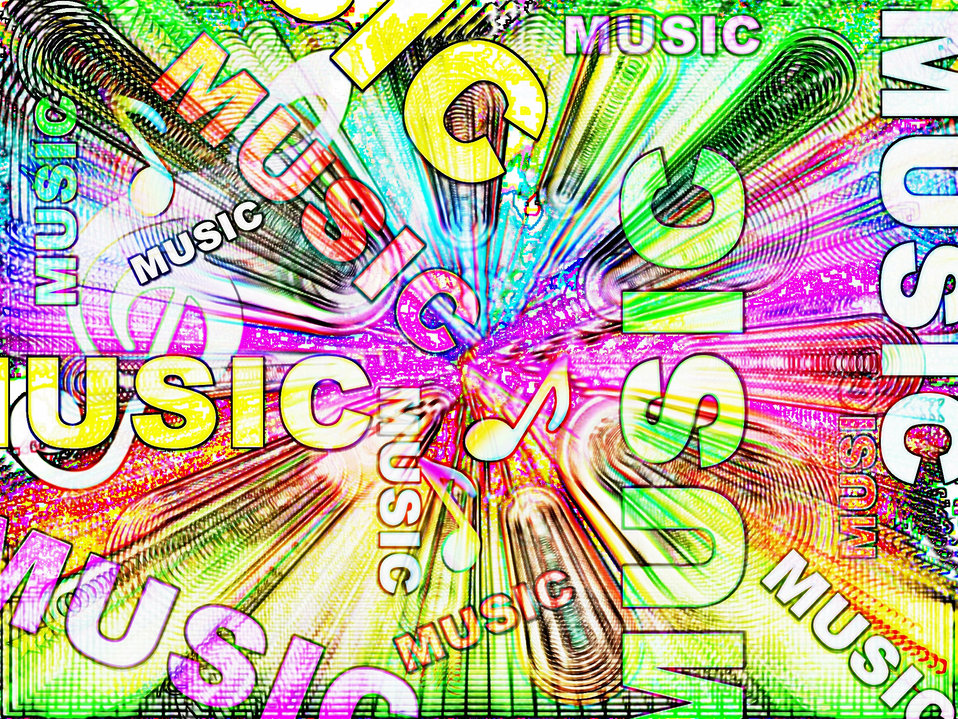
Background music

Colored background music.